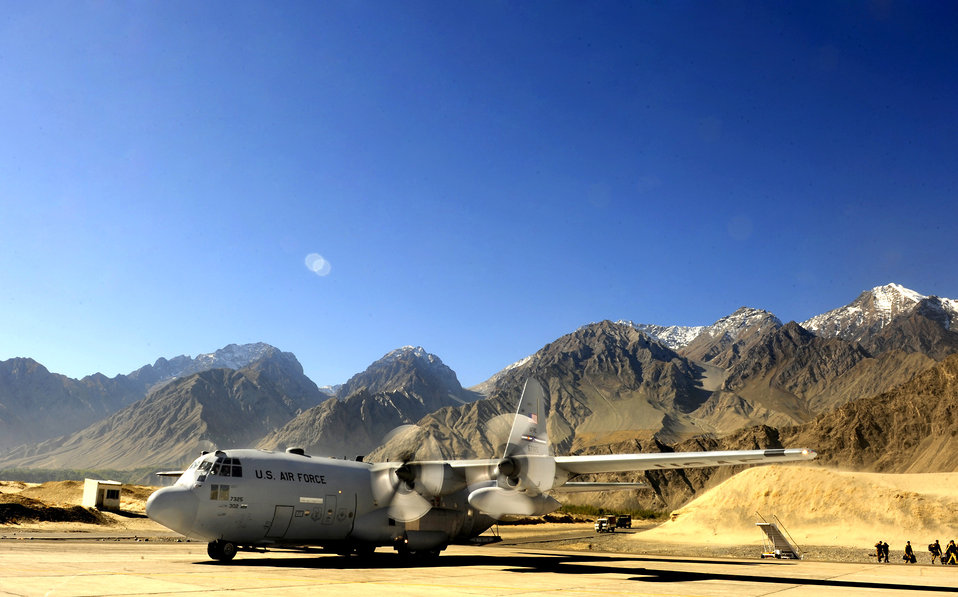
Flood relief

A U.S. Air Force C-130 Hercules is positioned to unload humanitarian aid supplies Oct. 3 at Skardu airfield, Pakistan. U.S. military aircrews, working in close coordination with the Pakistan military, have transported more than 6.6 million kilograms of relief supplies and evacuated 21,000 people in the flood-affected regions of Pakistan during August and September.